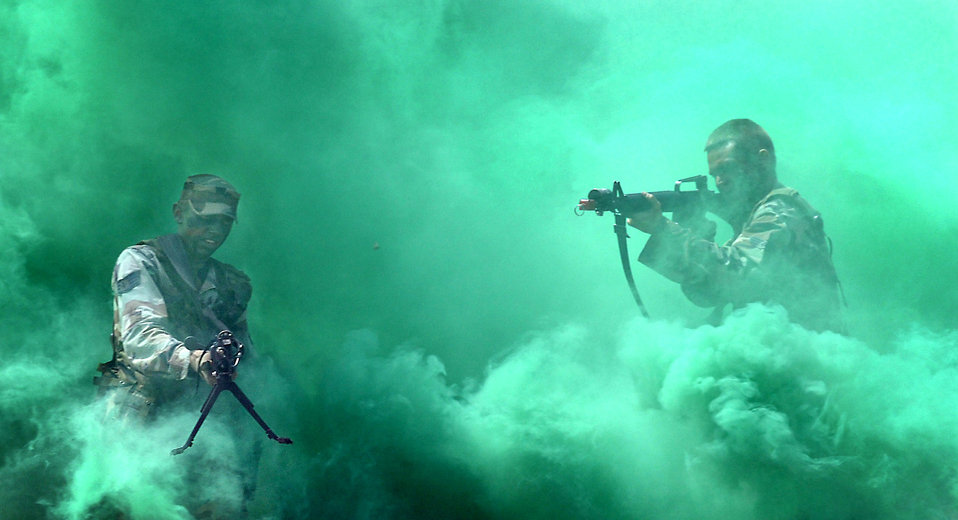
Fighting to win

Staff Sgt. Jeremiah Johnson, left, fires an M-240 weapon while Senior Airman Arthur Sgruggs fires an M-16 during a deployment exercise at the Air Force Academy, Colo. Known as Global Engagement, the exercise lays the foundation to lead, fight and win in a dynamic and diverse global environment.